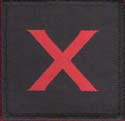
10 Para Battalion (V) parachute Regiment DZ Flash